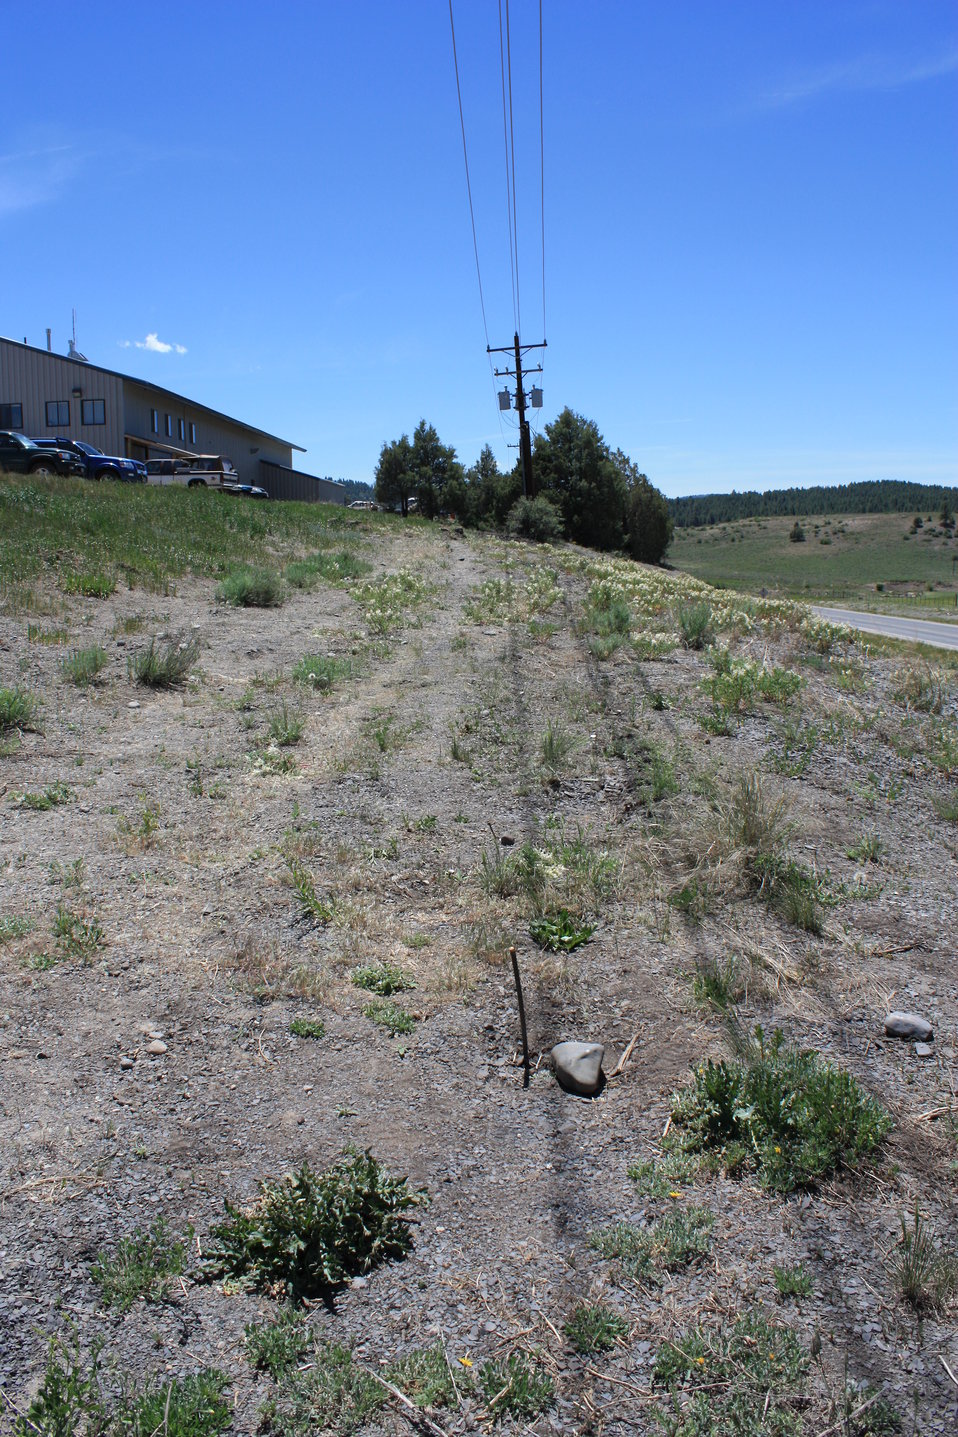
Pagosa Skyrocket Habitat

Because of its limited range and overlap with urban and agricultural areas, Pagosa skyrocket habitat includes partially developed lots and roadsides in Archuleta County, Colorado.

Photo credit: USFWS
...........................................................................

BACKGROUND:
Pagosa skyrocket (Ipomopsis polyantha) is an extremely rare plant endemic to two populations on Mancos shale outcrops in and around the Town of Pagosa Springs in Archuleta County, Colorado. This member of the phlox family (Polemoniaceae) grows as a rosette for one to many years; then flowers, produces seeds, and dies in its final year of life. In June and July when the species is flowering, numerous bees and other insects can be seen visiting its clusters of white flowers with small purple spots. These pollinators are essential to the survival of the species and are comprised primarily of native ground-dwelling solitary bees. Pagosa skyrocket habitat is unique, being comprised of barren shales where conditions are harsh and difficult for growth.

The species was discovered in 1899 by Charles Fuller Baker, an American naturalist, and described as a new species in 1904 by the well-known botanist Axel Rydberg. No comprehensive surveys were conducted until the mid-1980s, when it became a candidate for listing under the Endangered Species Act. Today the Pagosa skyrocket is threatened by commercial, residential, and agricultural property development; the associated new utility installations and access roads; and from the potential effects of climate change. Because of Pagosa skyrocket’s limited range, the fact that there are only two populations, its small population size, and numerous threats to the species, it was proposed for Endangered Species Act protection in 2010. A final listing is expected in 2011.

Eighty-eight percent of the areas where Pagosa skyrocket are found are private lands. The Endangered Species Act does not protect plants on private lands and therefore, all conservation actions on private land are voluntary. Funding is available to landowners wanting to conserve the species. Please contact Gina Glenne or Ellen Mayo at 970-243-2778 for further information on this species and ways that you can help with conservation and recovery.